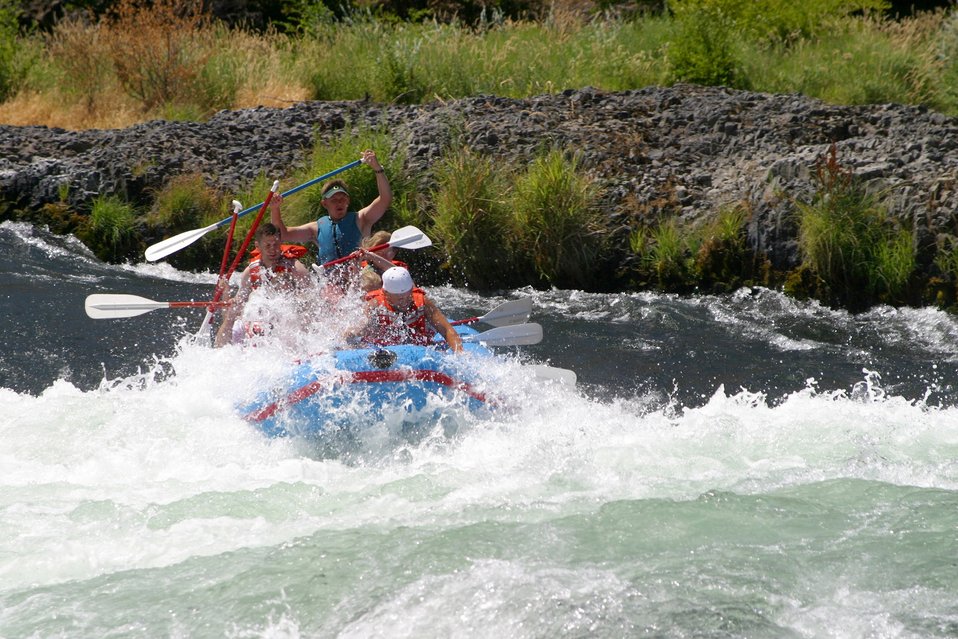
Oak Springs is a Class IV Rapids. The left channel has shallow rocks, large standing waves, turbulent currents and a large hole during high flows. The right channel has a large hole, shallow rocks, and turbulent currents. 7/26/03 Pelton Dam 3600 cfs: Moody Rapids 4300 cfs.